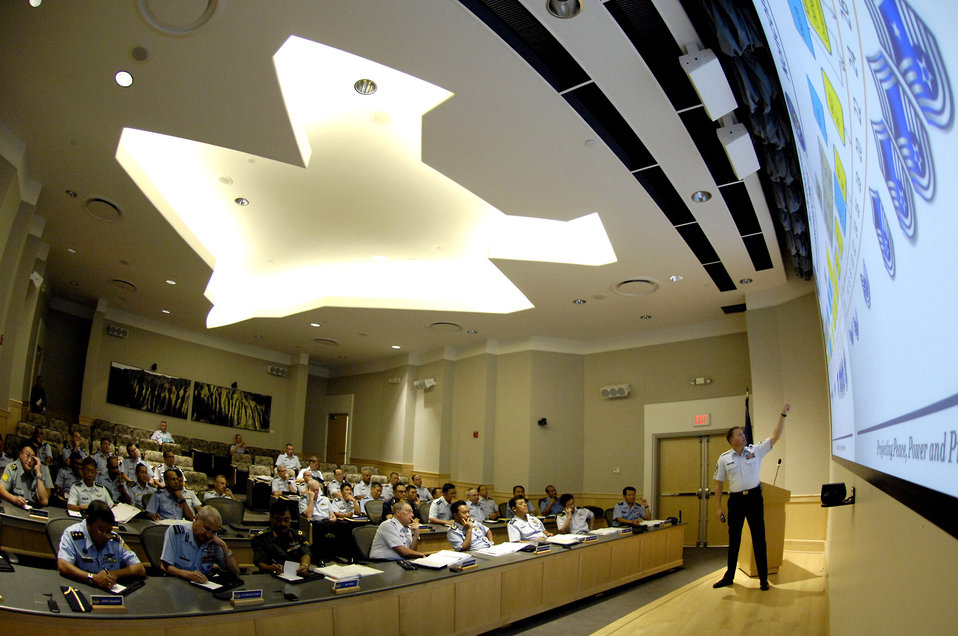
Pacific Rim Airpower Symposium provides forum

Chief Master Sgt. Todd Salzman talks about the Air Force enlisted structure Sept. 18 to members at the Pacific Rim Airpower Symposium held at the Aloha Conference Center on Hickam Air Force Base, Hawaii. The PACRIM Symposium provides an ideal forum to communicate the value of U.S. engagement with nations of the Asia-Pacific region and our commitment to the region's internal, local and national audiences. Chief Salzman is the 13th Air Force command chief.